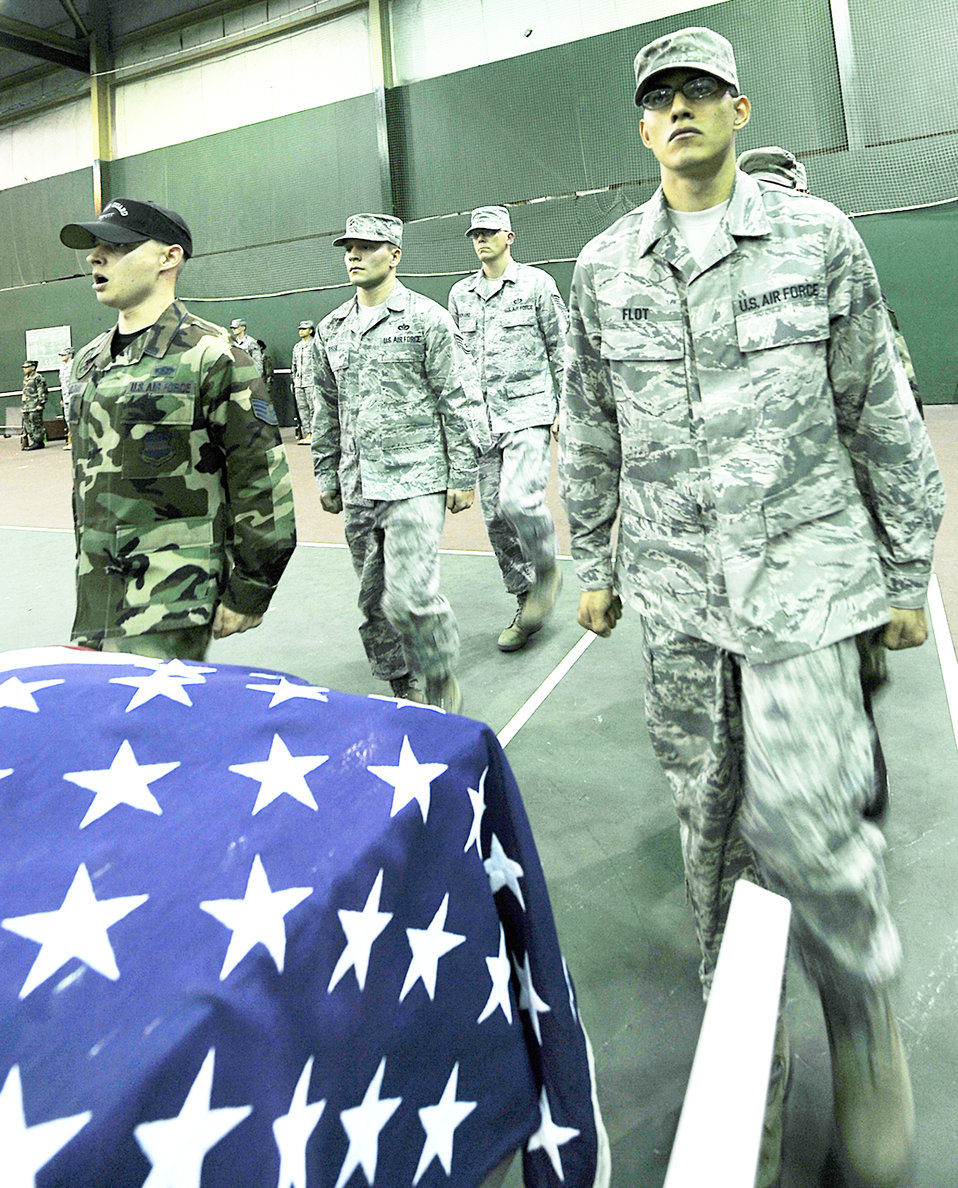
Flight Halt!

Staff Sgt. Aaron Molchak gives commands to other base honor guard members during a training session Oct. 21, 2009, at Offutt Air Force Base, Neb. Air Force Honor Guard trainers visited the base to evaluate and help sharpen the skills of base honor guard members. Sergeant Molchak is an Offutt AFB honor guard member.